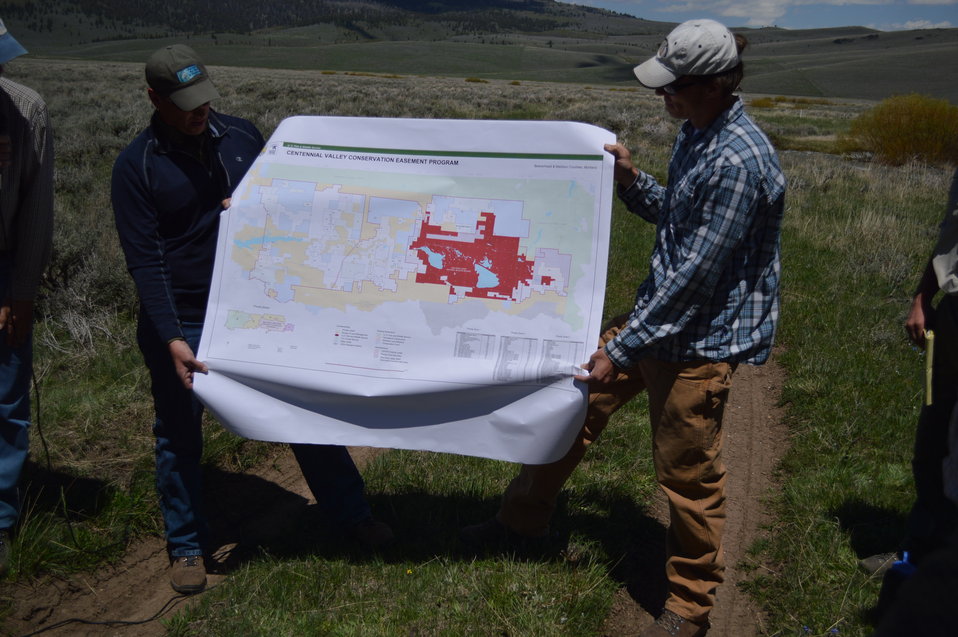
Regional Leadership Visit to Montana 2014